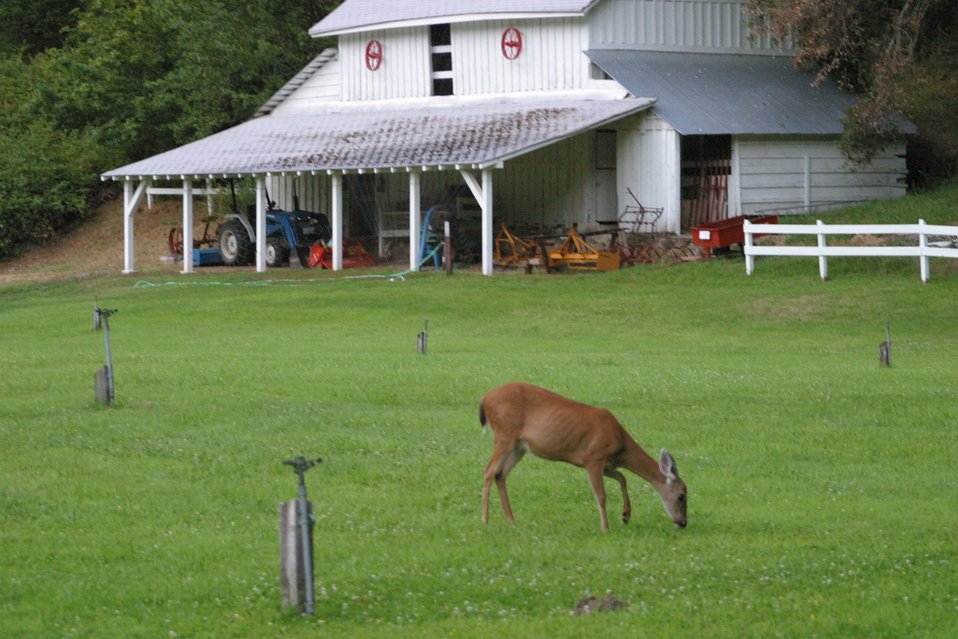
Black tail deer in the meadow at the Rogue River Ranch.